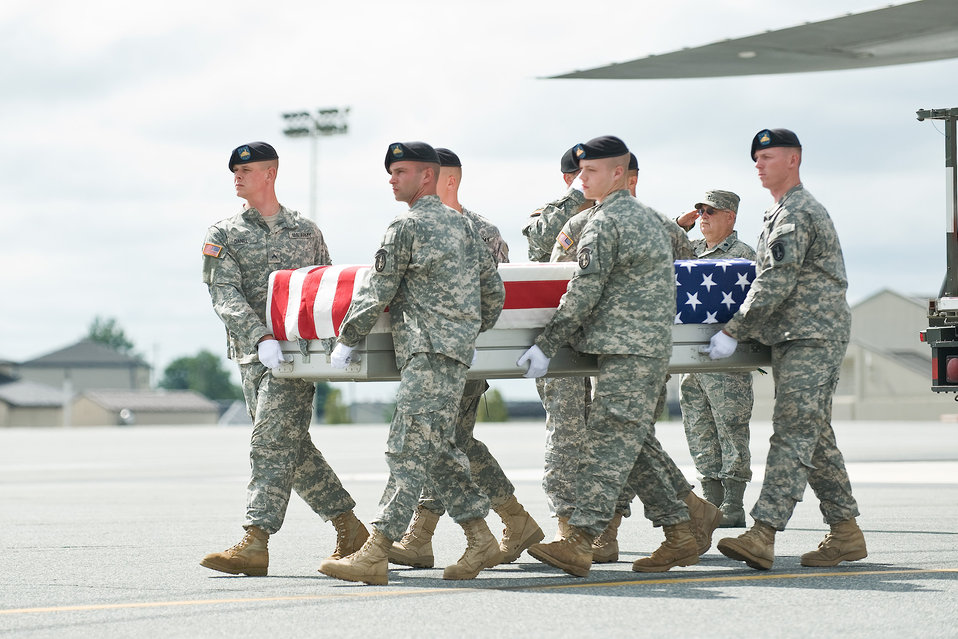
A chaplain's view

Chaplain (Lt. Col.) Richard Cavens salutes as an Army carry team transfers the remains of Army Spc. Pedro A. Millet Meletiche, of Elizabeth, N.J., Aug. 24, 2010, at Dover Air Force Base, Del. Spc. Millet Meletiche was assigned to the 1st Battalion, 66th Armor Regiment, 1st Brigade Combat Team, 4th Infantry Division, at Fort Carson, Colo. Chaplain Cavens is with the Alaska Air National Guard.